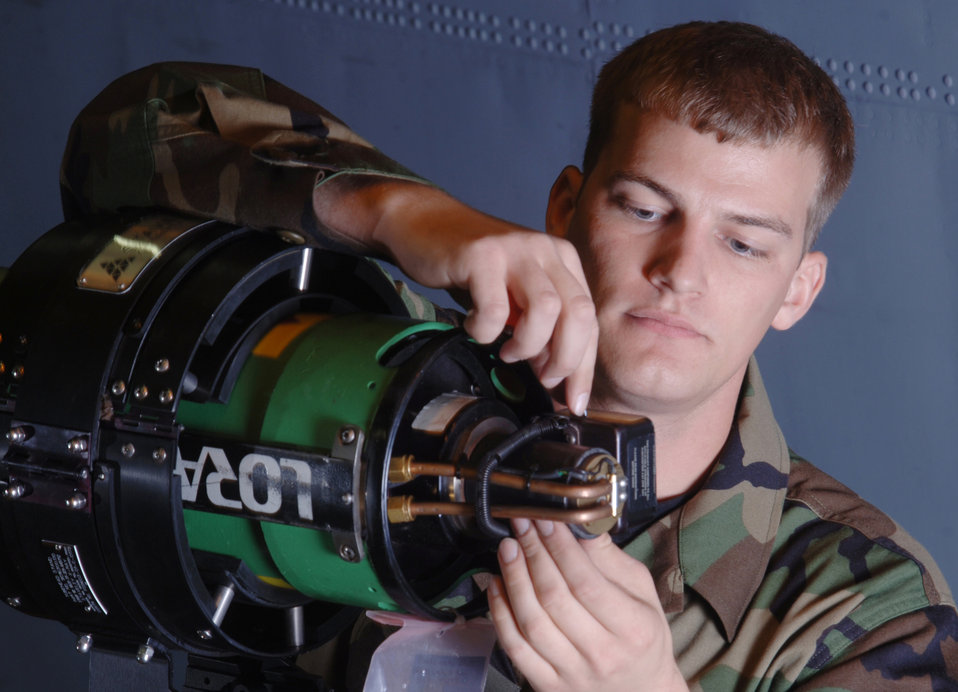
X-ray eyes

YOKOTA AIR BASE, Japan -- Senior Airman Jonathan Keller prepares to operate a Lorad portable X-ray equipment during inspection of a C-130 Hercules aircraft inside a hangar here. The nondestructive inspection technician, assigned to the 374th Maintenance Squadron here, is checking the door frame of the aircraft for structural cracks. NDI Airmen use X-ray and advanced technology to examine the uniformity, quality and serviceability of components of assigned and in-transit aircraft.